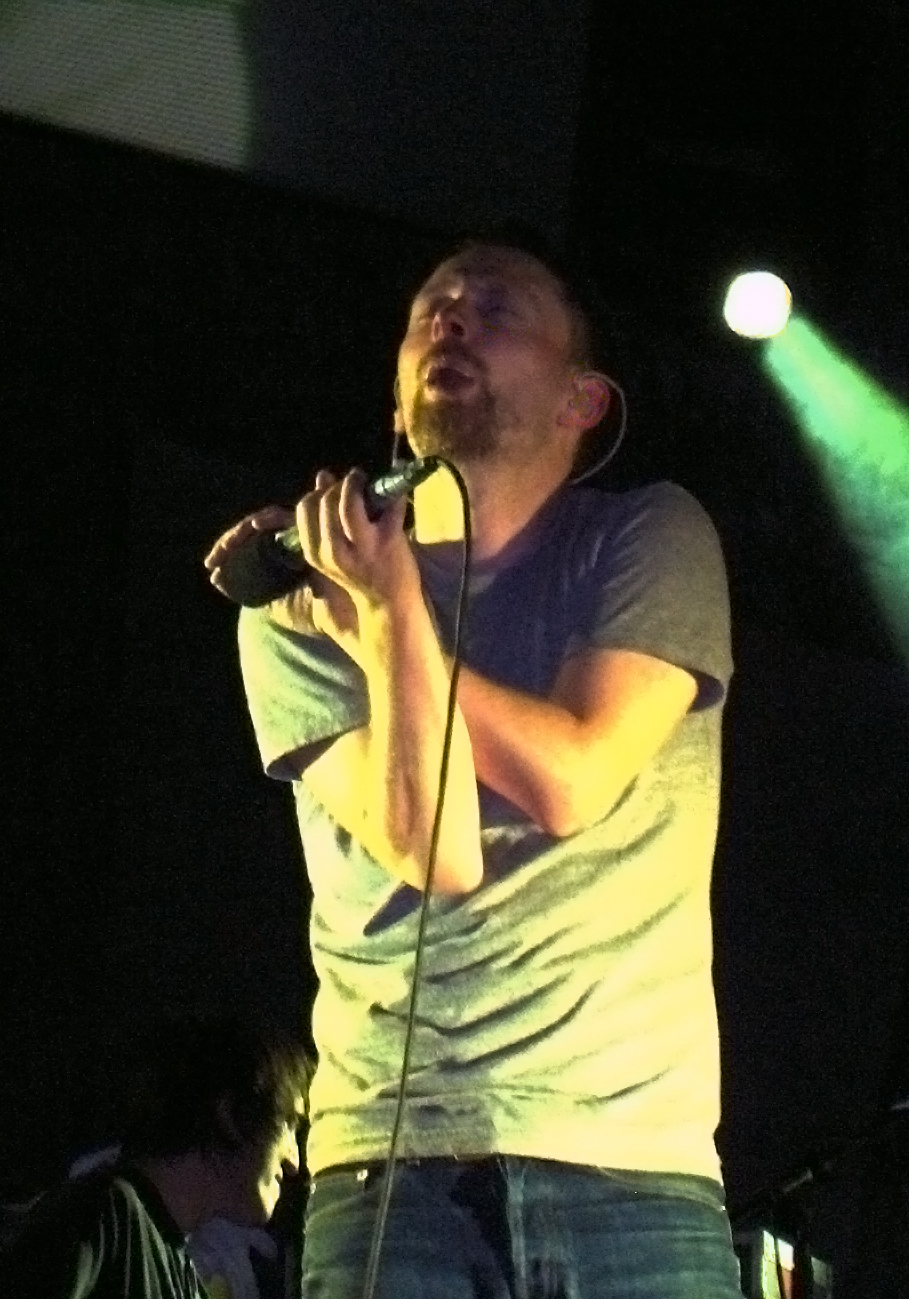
Deutsch: Thom Yorke bei Rock Oz'Arénes in Avenches